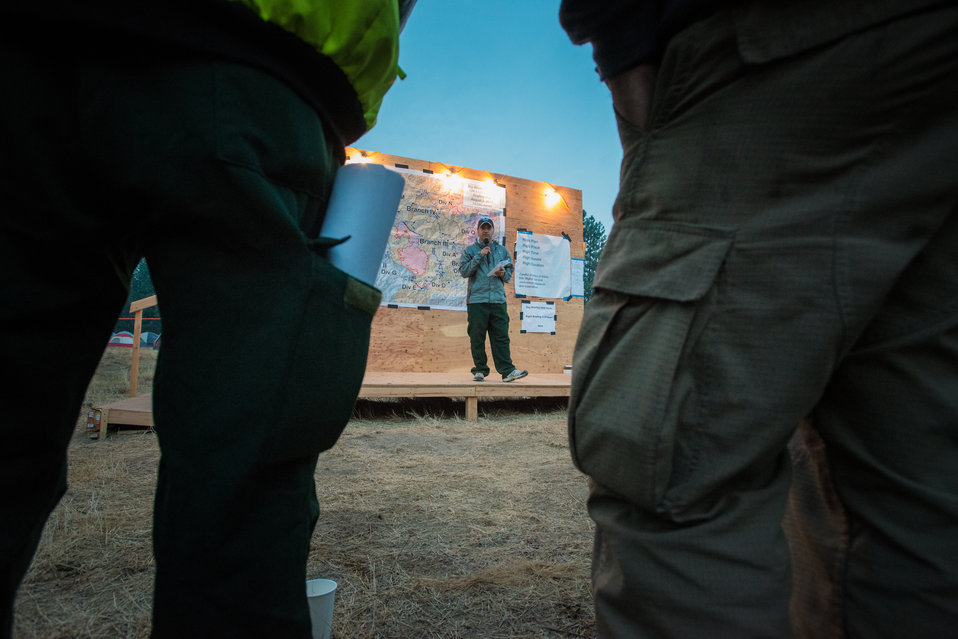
The Morning Briefing at the Big Windy Complex Wildlands Fire, Incident Command Post (ICP) in Merlin, OR on Friday, Aug 9, 2013. Several presenters taking turns, bringing people up to speed on the nights activates and what the objectives are for today. The fire center is approximately 15 miles west of Interstate-5 and East Northeast of Galice, Oregon.